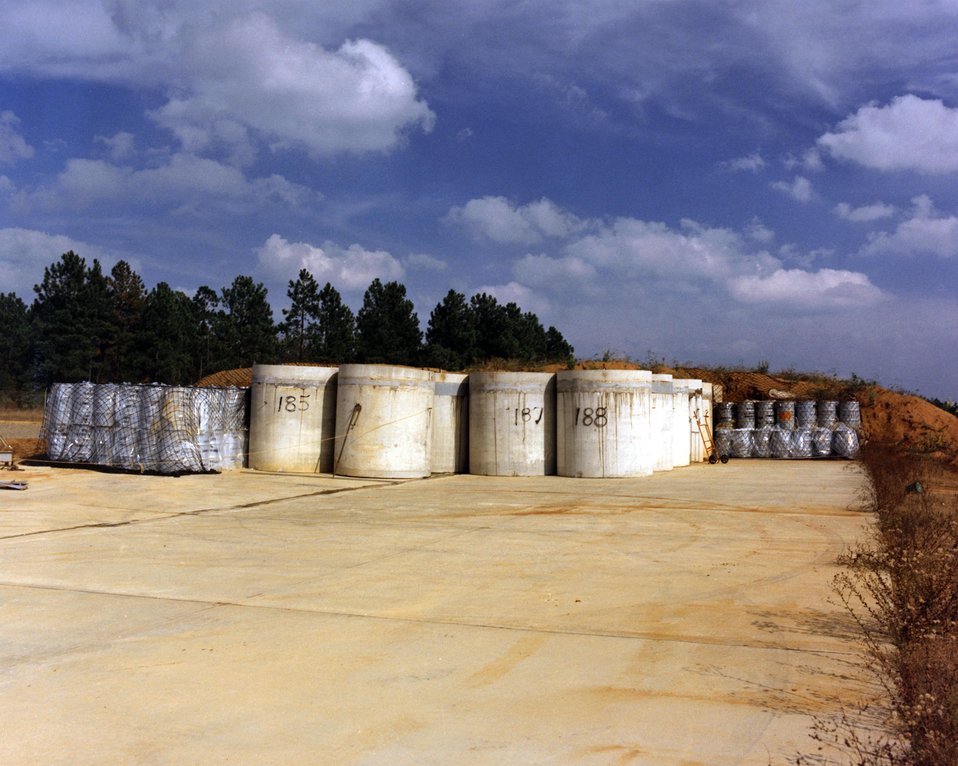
VIEW SHOWING TRANSURANIC (TRU) WASTE STORAGE PREPARATIONS AT THE SAVANNAH RIVER SITE BURIAL GROUND.

THE TRANSURANIC (TRU) WASTE AT SAVANNAH RIVER IS PACKAGED IN 55-GALLON STEEL DRUMS. DRUMS WITH RADIATION LEVELS OF LESS THAN 0.5 CURIES ARE STORED DIRECTLY ON THE CONCRETE PAD, WHILE HIGHER-ACTIVITY DRUMS ARE PLACED INSIDE CONCRETE CULVERTS. ONCE ALL AVAILABLE SPACE IS USED, THE SLAB WILL BE CONVERED WITH EARTH. THE WASTE WILL BE RETRIEVED AT A LATER DATE.